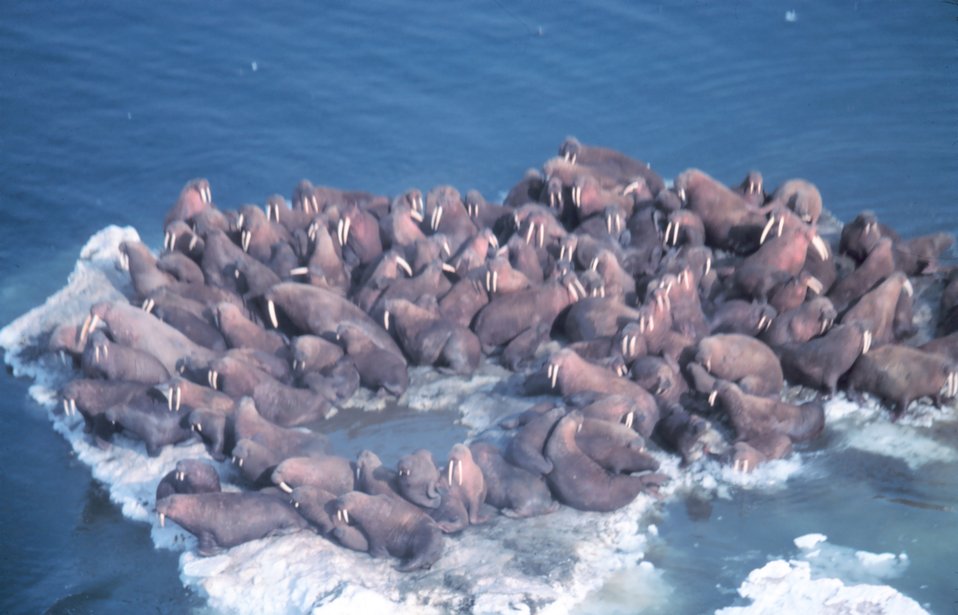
Walrus - Odobenus rosmarus divergens - hauled out on Bering Sea ice.